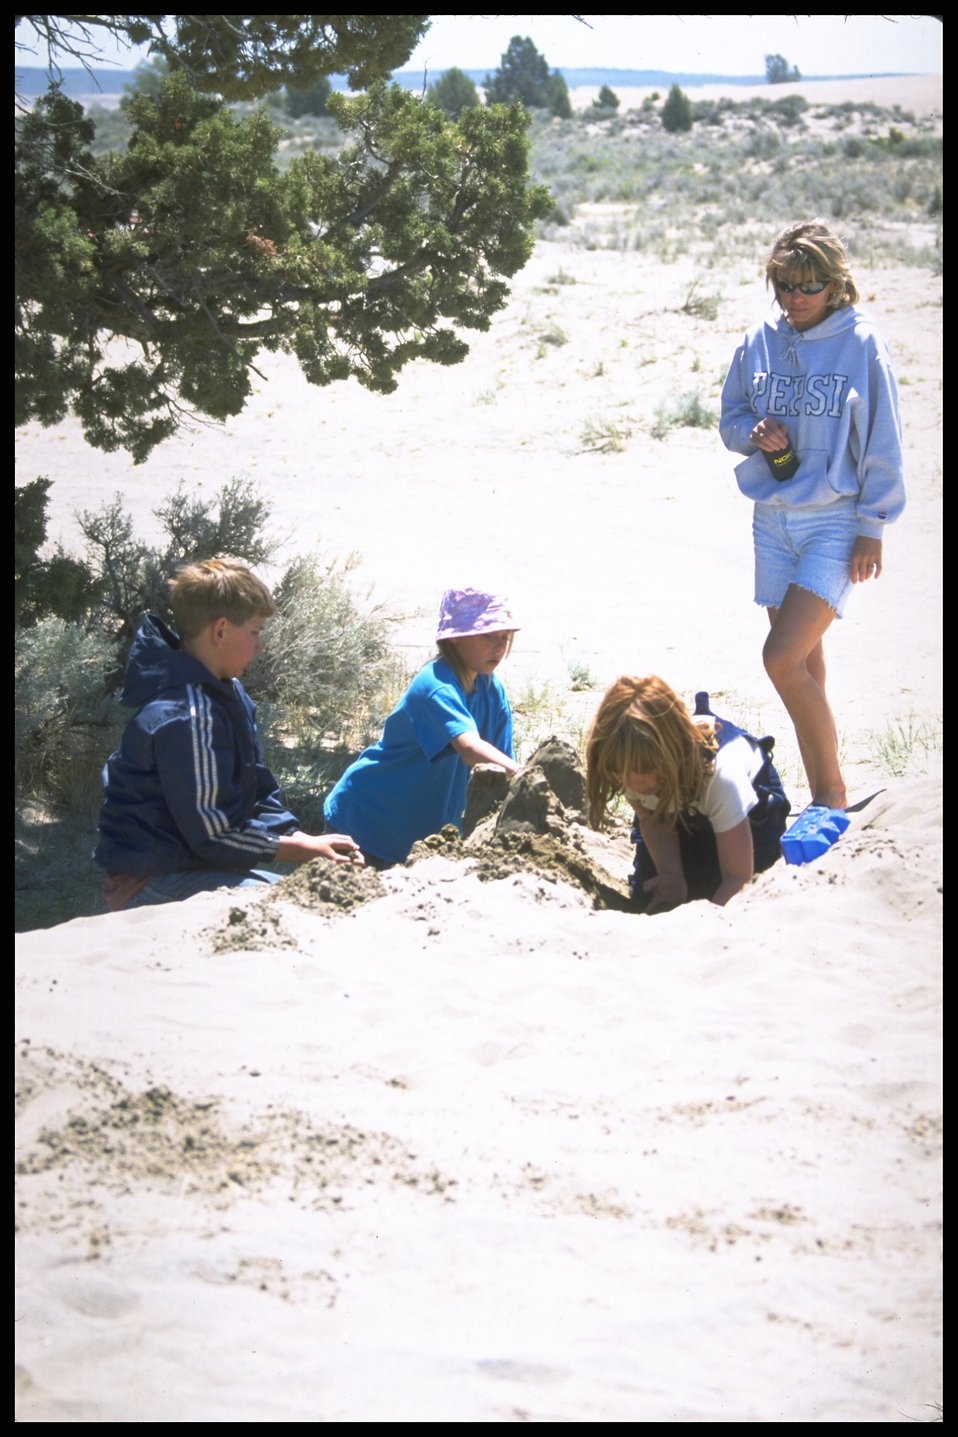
Children playing in Sand Dunes, Christmas Valley, Lakeview District.